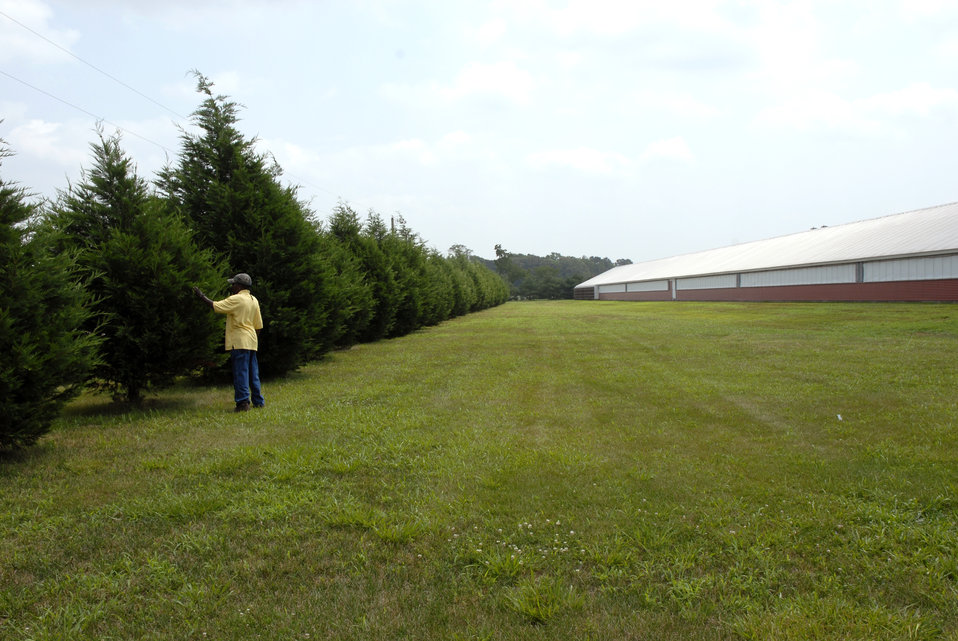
A U.S. Department of Agriculture (USDA) Natural Resources Conservation Service (NRCS) employee examines the windbreak on a chicken farm in Delaware on July 8, 2008. The USDA NRCS Conservation Effects Assessment Project (CEAP) assists farmers in creating windbreaks to lessen odors emanating from the farm by minimizing air movement around the chicken houses and manure sheds.